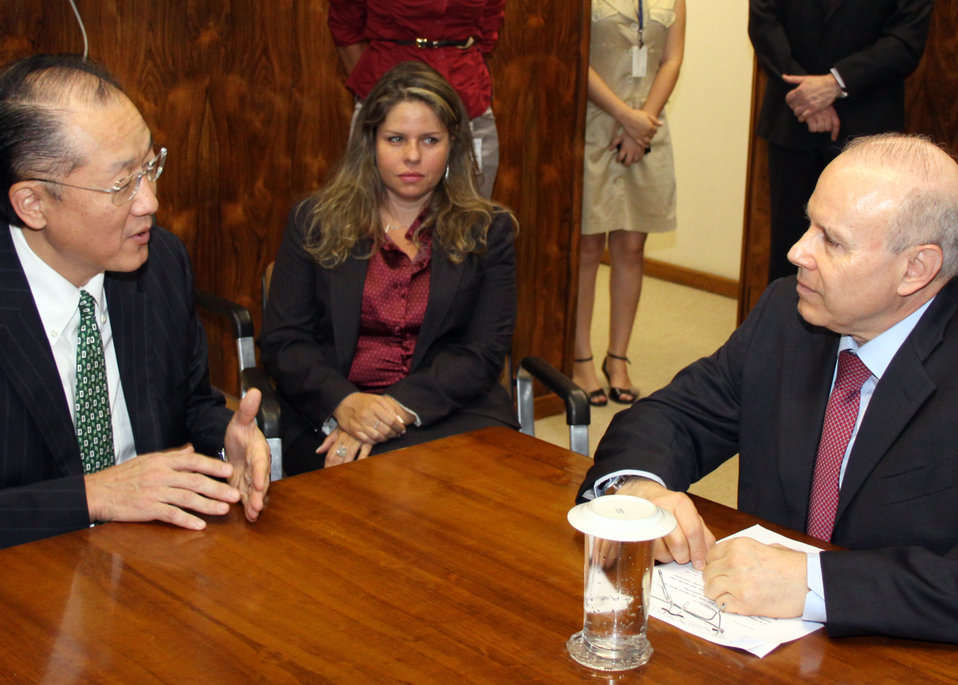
Dr. Jim Yong Kim Meeting with Brazilian Finance Minister Guido Mantega

Dr. Jim Yong Kim, President Obama's nominee for the World Bank presidency, met in Brasilia today with Brazilian Finance Minister Guido Mantega. They discussed Dr. Kim's work on economic development initiatives in Latin America, how lessons from the Brazilian model for inclusive growth can be applied in other countries, and the critical role of emerging economies in a stronger and more effective World Bank.